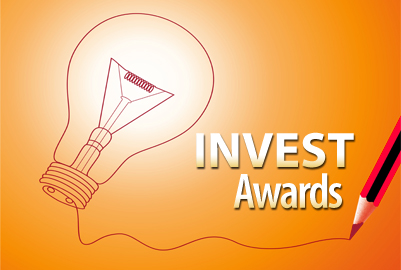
INVEST Awards